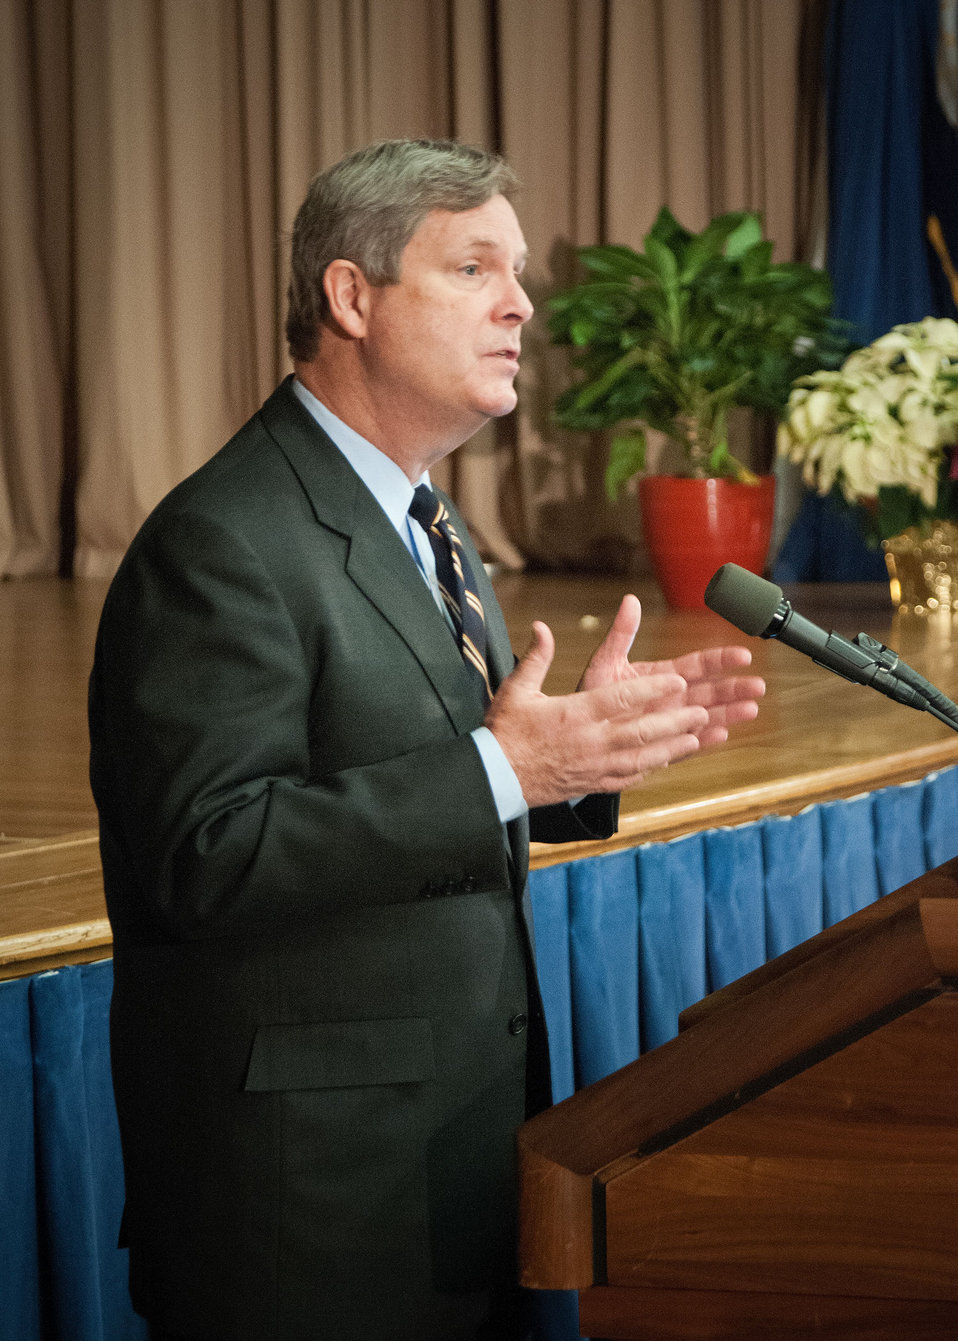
Agriculture Secretary Tom Vilsack addresses employees at the U.S. Department of Agriculture’s (USDA) Fourth Annual Cultural Transformation event held in Washington, D.C. on Tuesday, Dec. 4, 2012. The theme for the event “Faces of Cultural Transformation” Focusing on changing the way we serve our customers and cultural transformation’s benefits to employees. Secretary Vilsack spoke of the progress made during his administration’s tenure at the department and how USDA is cited as a positive example of cultural transformation in the workplace.